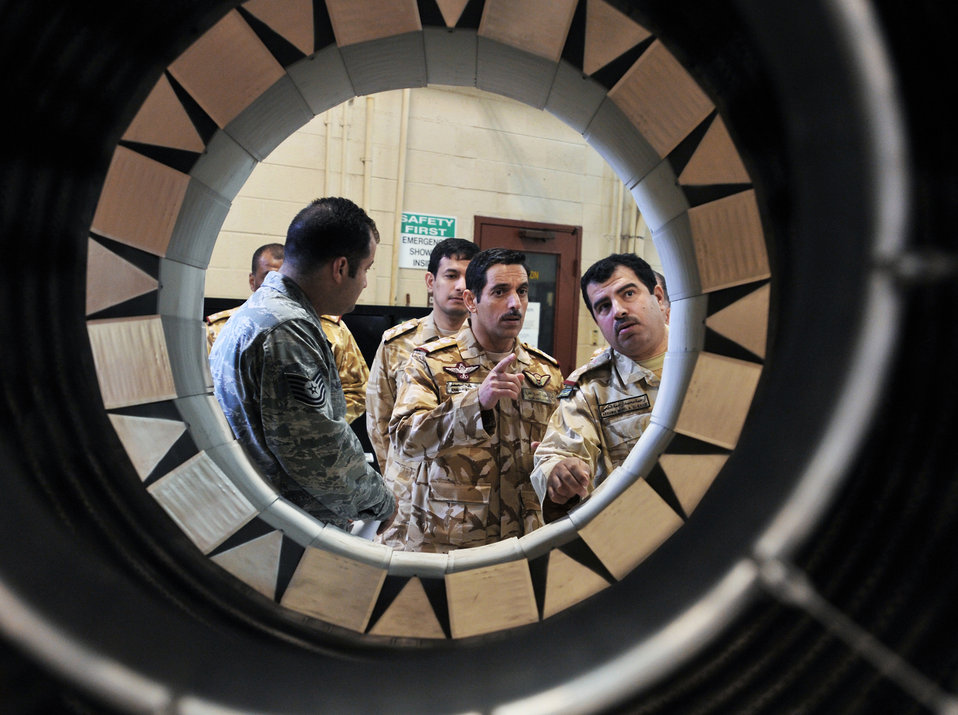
Qatar Delegation visits Shaw

Tech. Sgt. Domingo Muniz shows Qatari air force officers an augmenter for an F-16 Fighting Falcon jet engine March 28, 2011, at Shaw Air Force Base, S.C. Qatar Emiri officers toured Shaw AFB to see how the installation does its various missions. Muniz is a 20th Component Maintenance Squadron aerospace propulsion craftsman.